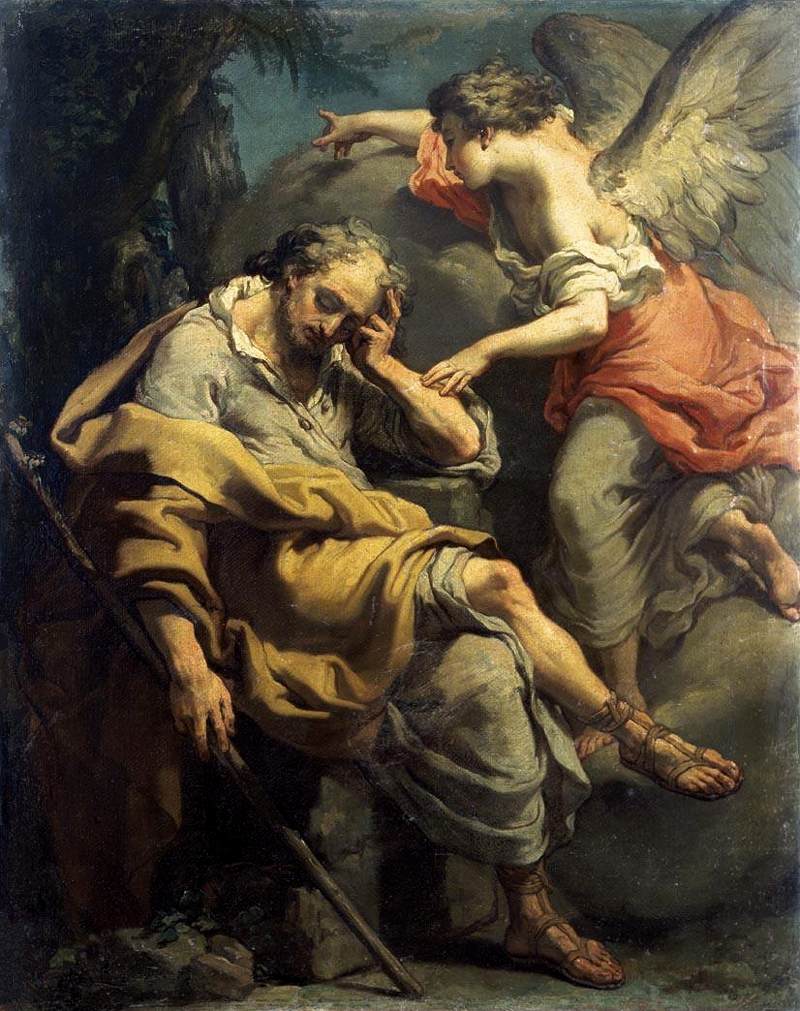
'Joseph's Dream', painting by Gaetano Gandolfi, c. 1790